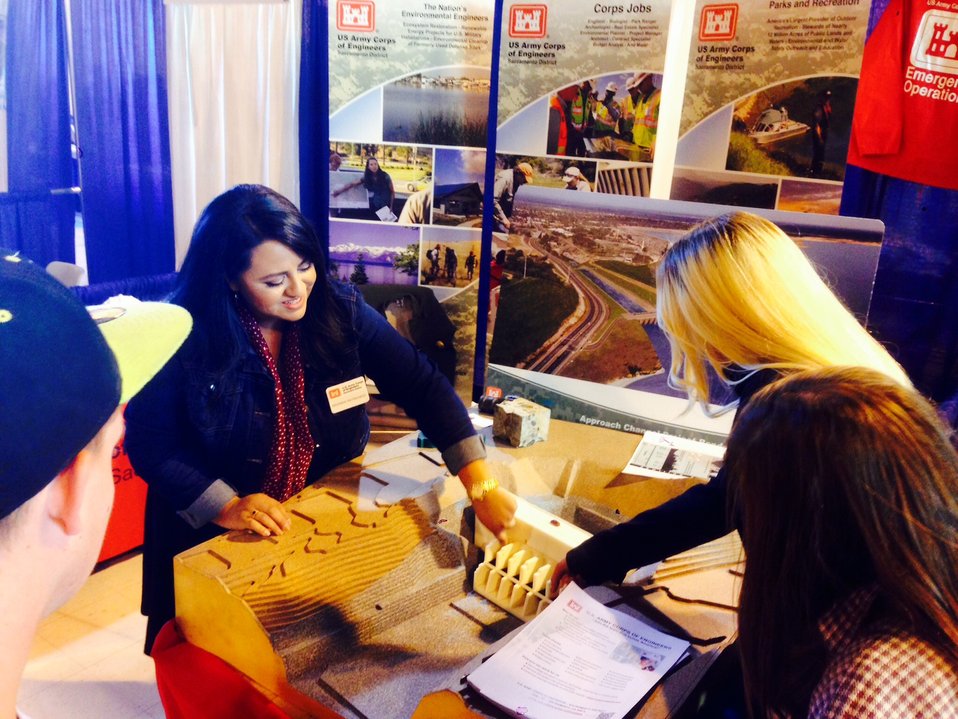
Arianna Raymundo talks jobs at GPS Career Fair

Arianna Raymundo, a geotechnical engineer with the U.S. Army Corps of Engineers Sacramento District, explains a model of the Folsom Dam auxiliary spillway to local high school students at the GPS Career Fair at Cal Expo in Sacramento, Calif., Sept. 25, 2013. The district hosted a booth at the event to encourage kids to pursue careers in science, technology, engineering and mathematics, or STEM.